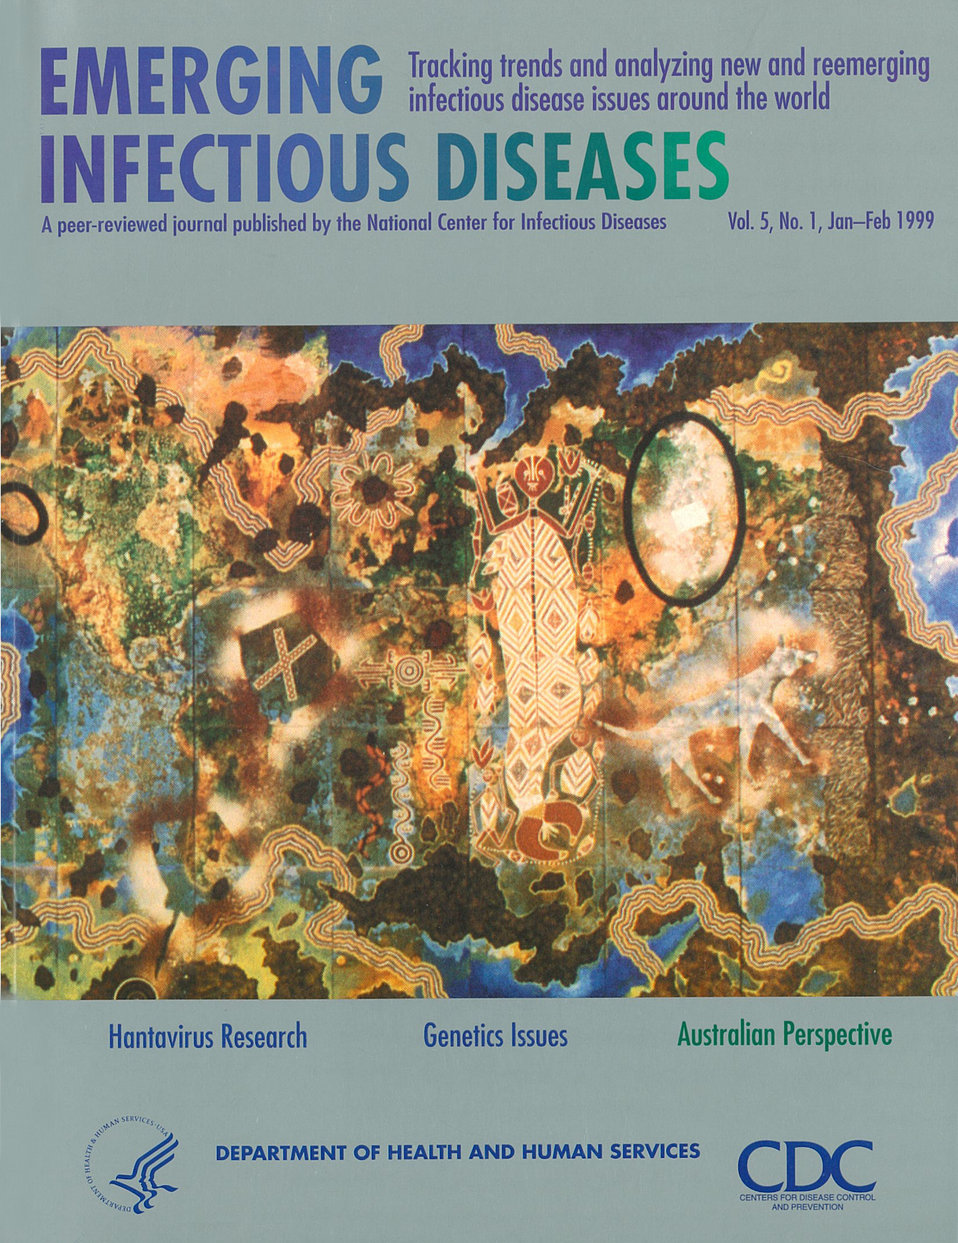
Emerging Infectious Diseases (EID) cover artwork for Volume 5, Number 1, January-February 1999 issue.